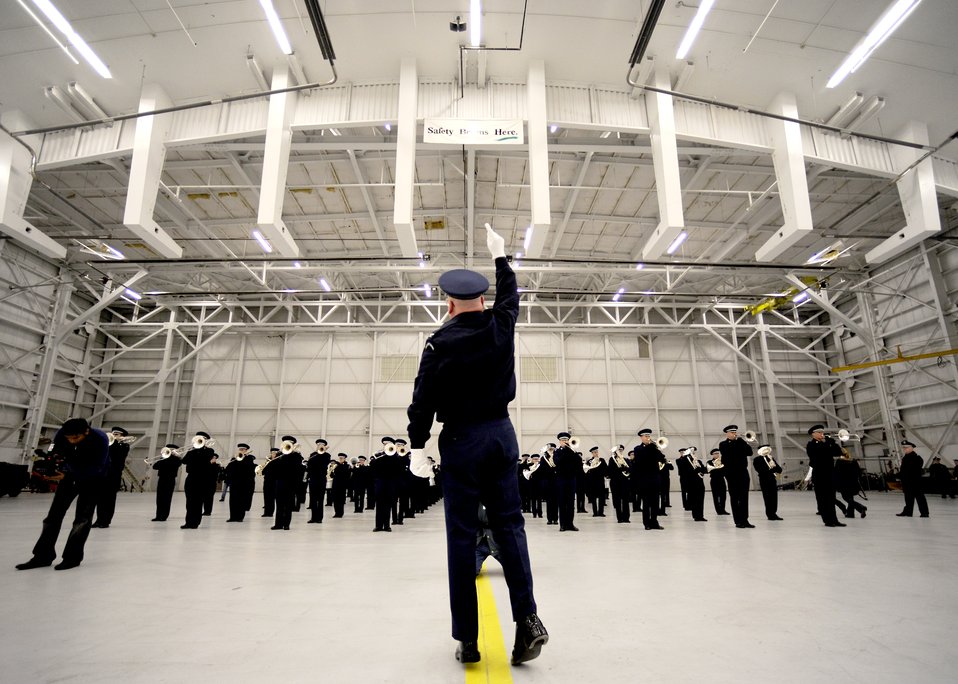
Air Force Band prepares for inauguration day

The 99-piece Air Force Band practices their music inside a hangar Jan. 7 at Andrews Air Force Base, Md., in preparation of their parade performance for the inauguration of President-elect Barack Obama.